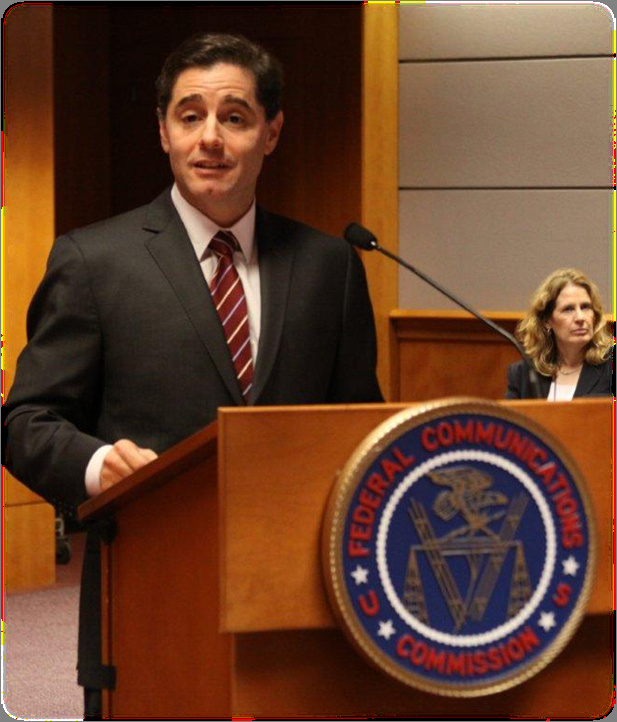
Chairman Julius Genachowski, FCC